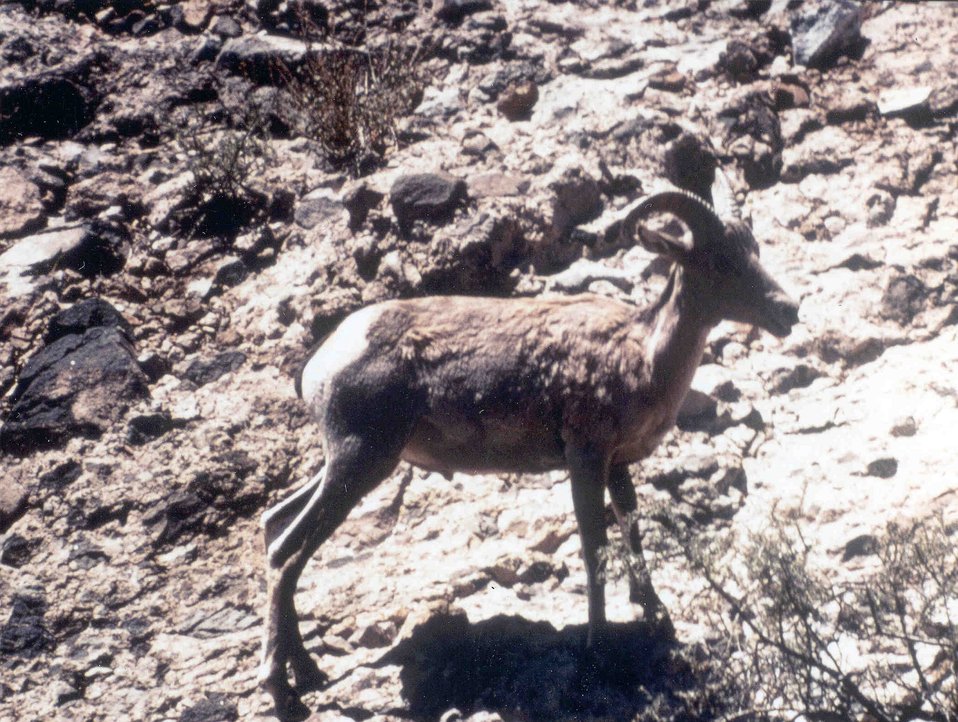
Desert Bighorn Sheep posing for the camera